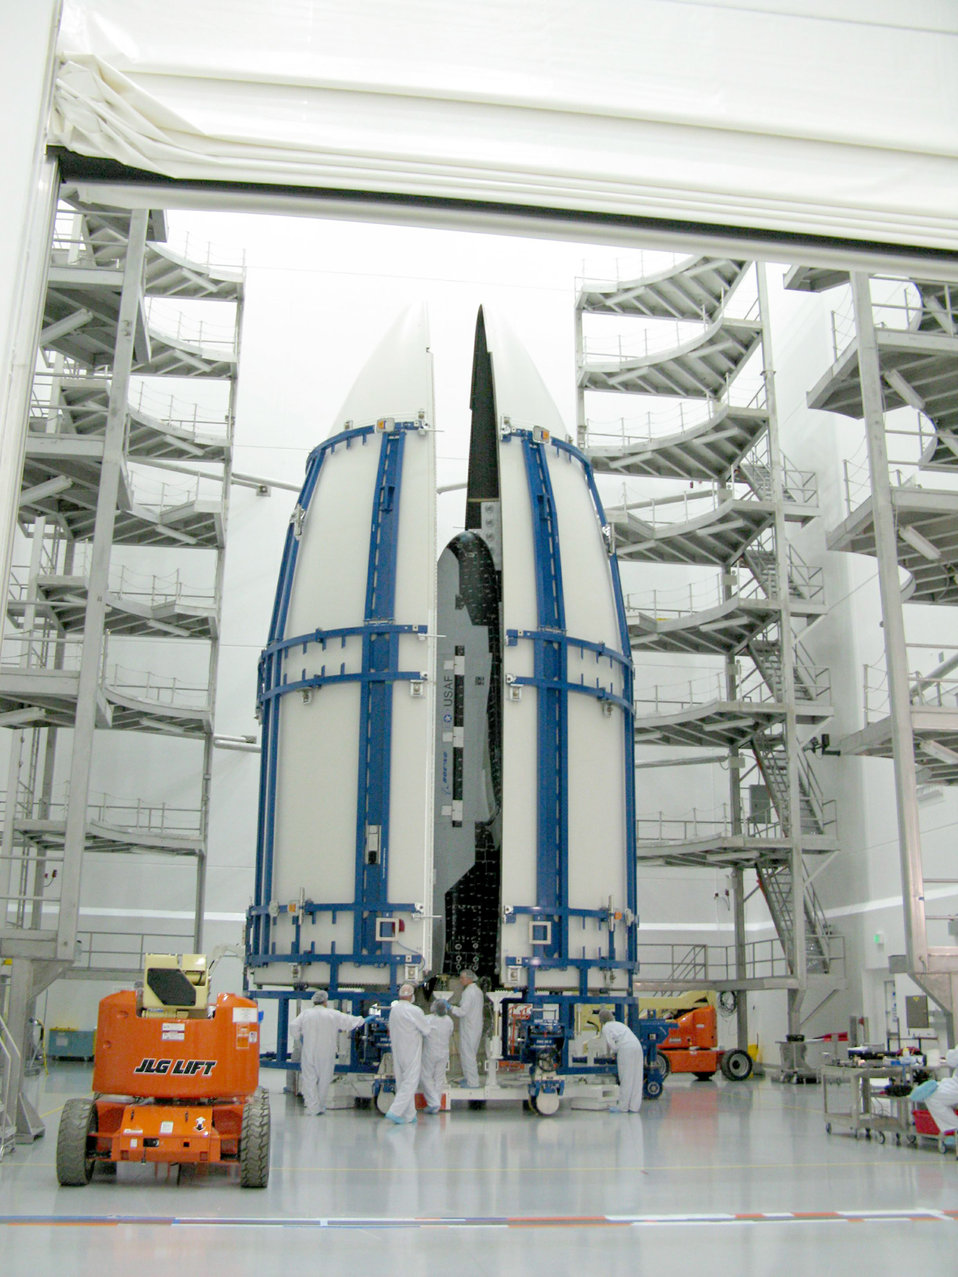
X-37B

The US Air Force X-37B Orbital Test Vehicle during encapsulation within the
United Launch Alliance Atlas V 5-meter fairing Feb. 8, 2011, at Astrotech in Titusville, Fla. The fairing protects and carries the OTV into space.